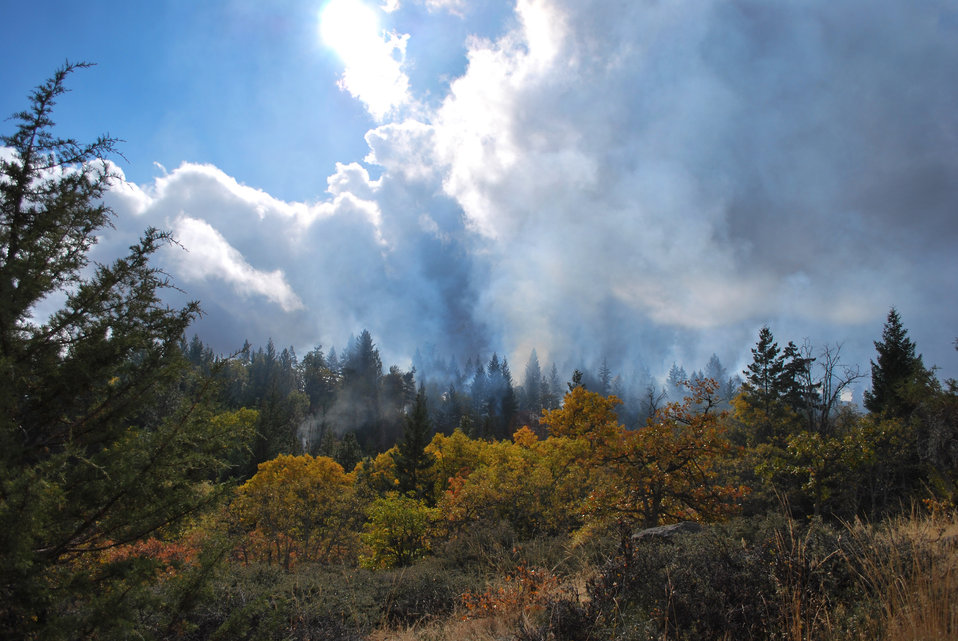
Prescribed burning and thinning